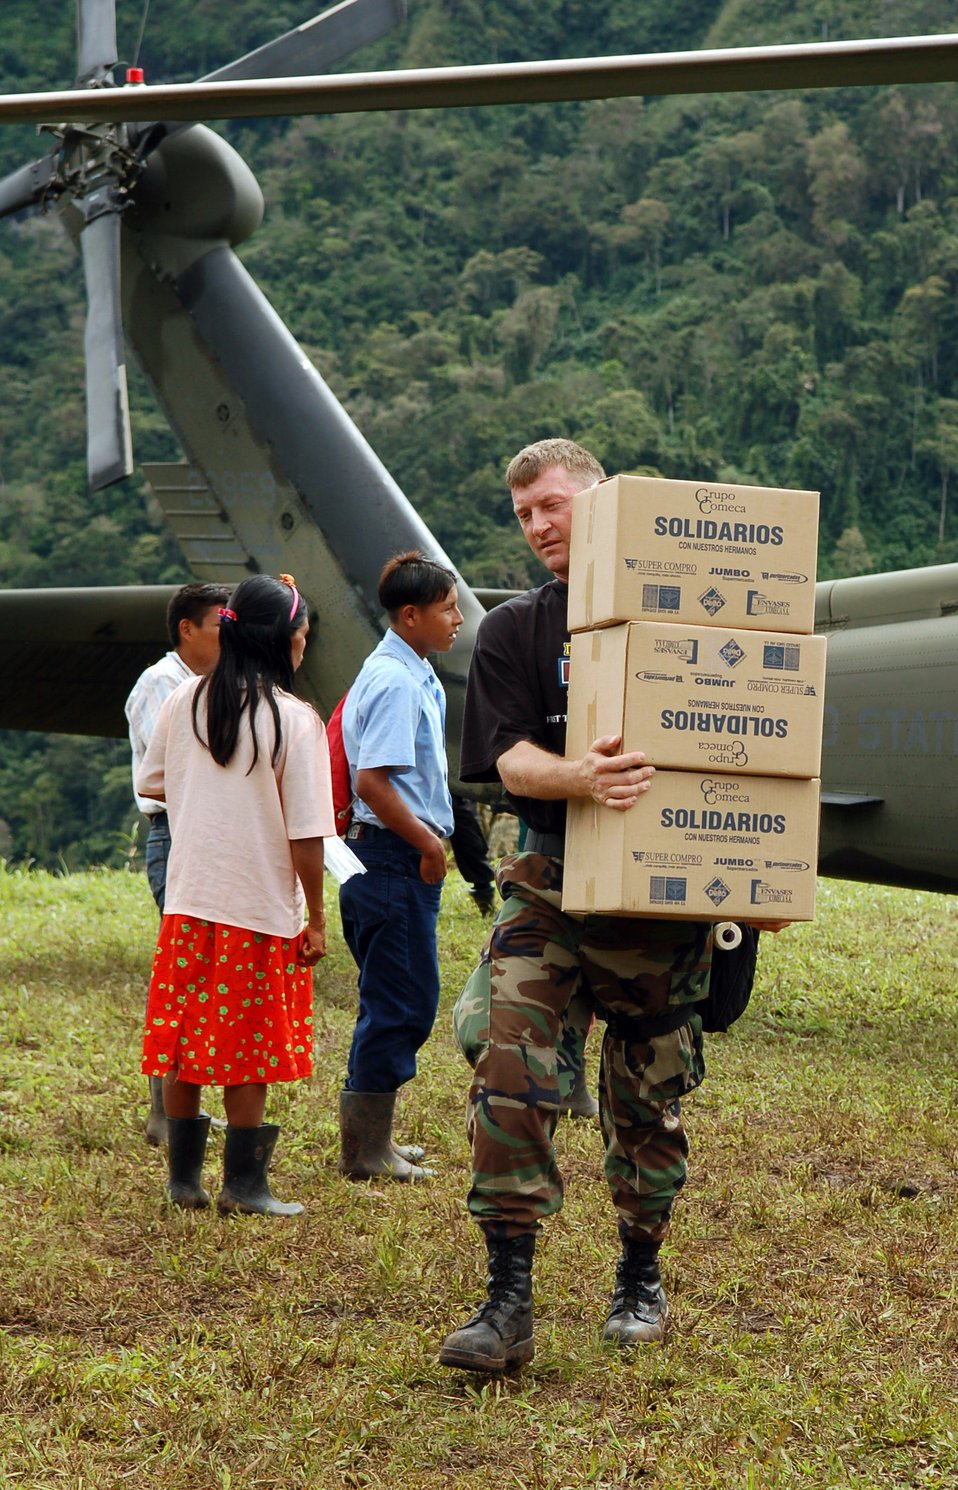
American servicemembers deploy to Costa Rica

Master Sgt. Troy Himes carries boxes of food from an Army UH-60 Black Hawk helicopter to a collection point Dec. 18 at Piedra Mesa, Costa Rica. Sergeant Himes is assigned to the Joint Task Force-Bravo medical element. JTF-Bravo deployed 28 servicemembers from Soto Cano Air Base, Honduras, to Costa Rica at the invitation of the country's ministry of health for a medical readiness training exercise.